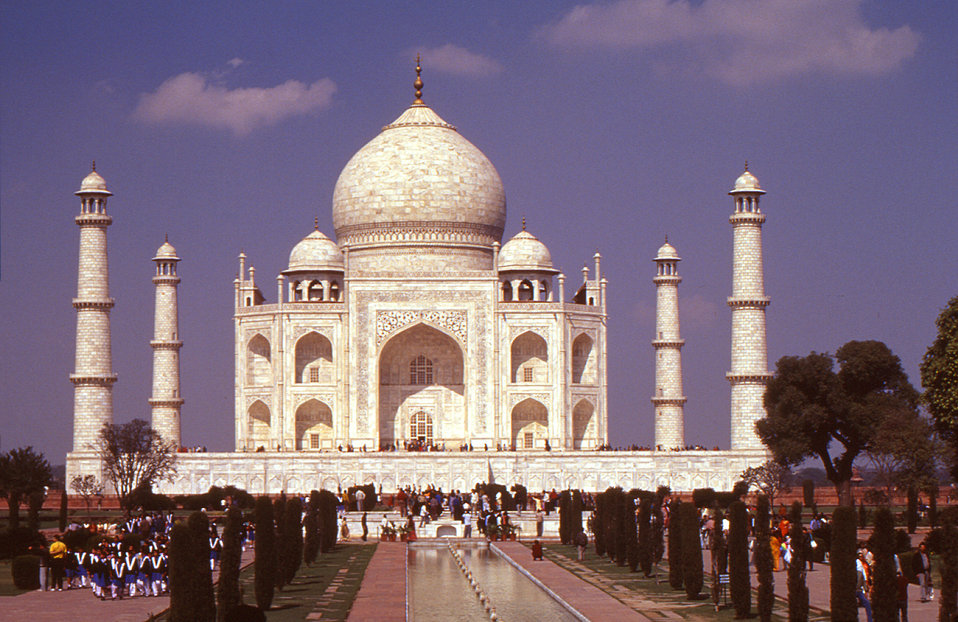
This 2000 image of the Taj Mahal monument in Agra, India, was taken during a 'Stop Transmission of Polio' (STOP) assignment between January and April, 2000. This extravagant monument was built by Emperor Shah Jahan in memory of his second wife, Mumtaz Mahal. She died in 1631 following childbirth, and left her husband heartbroken. Construction on the monument was begun in 1631, but wasn't completed until 1653. Over 20,000 people in India and Central Asia worked on the building.At the time of this field assignment, team member/photographer Chris Zahniser, R.N., was assigned to the state of Uttar Pradesh in northern India, and spent three months working in the districts of Gorakhpur and Deoria.